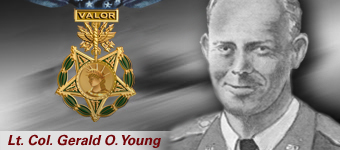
Lt. Col. Gerald O. Young, Medal of Honor recipient.